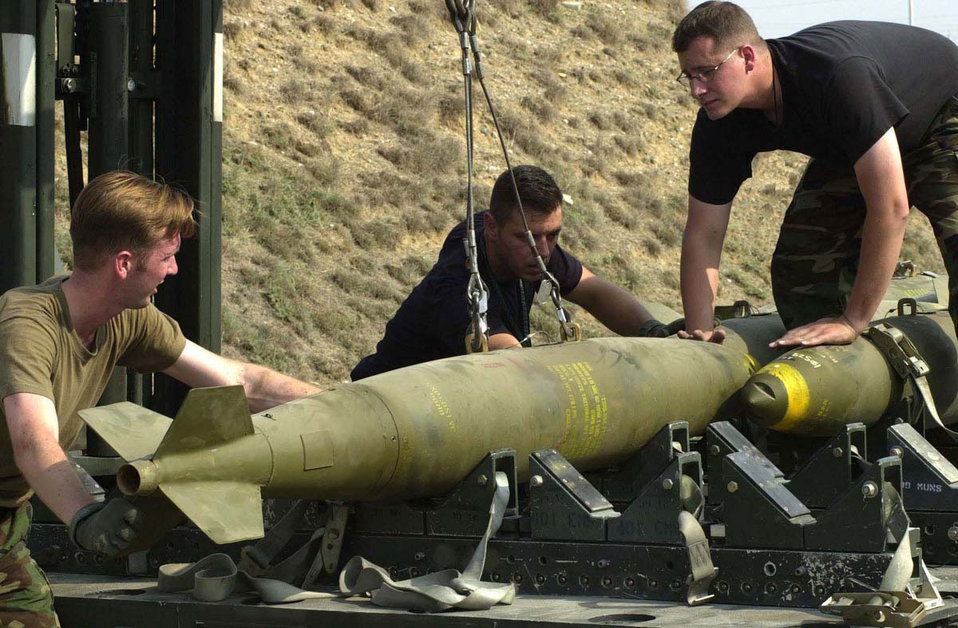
Bomb handlers

INCIRLIK AIR BASE, Turkey -- Staff Sgt. William Hartford and Staff Sgt. Christopher Haider, 39th Maintenance Squadron, conventional maintenance crew chiefs, and Staff Sgt. Jason Harre, 31st Maintenance Squadron, conventional maintenance crew chief from Aviano Air Base, Italy, position the MK-82 bombs on the munitions handling unit trailer for transport to the munitions assembly conveyor here, Sept. 25, 2001. Both are deployed in support of Operation Northern Watch.